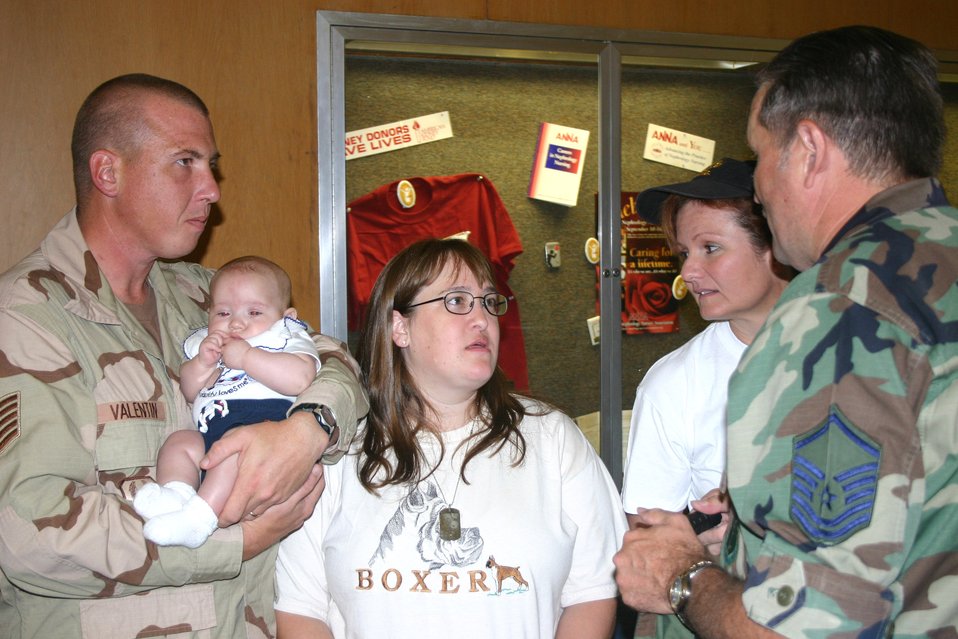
Lackland medics keep steady deployment pace

Tech. Sgt. Mike Valentin holds his 3-month-old son, Tyler, before departing for Balad Air Base, Iraq, in September. He is joined by his wife, Staff Sgt. Lorie Valentin, Capt. Marty Paul and Master Sgt. Thomas Eckhoff. Approximately 100 Airmen from the 59th Medical Wing at Lackland Air Force Base, Texas, deployed in support of operations Enduring Freedom and Iraqi Freedom. Sergeant Valentin is assigned to the 59th Medical Operations Squadron.